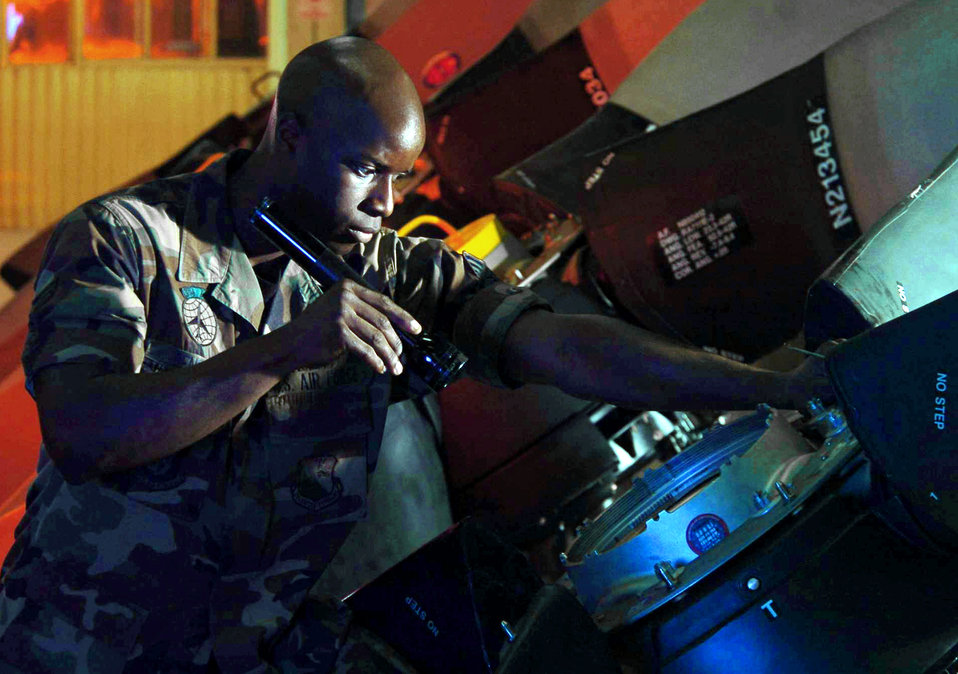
Checkin' it out

YOKOTA AIR BASE, Japan -- Senior Airman Brandon Benson uses a flashlight to look for cracks in a C-130 Hercules barrel assembly during a routine inspection here. Airman Benson and other Airmen of the T56 Engine Regional Repair Center repair all C-130 cargo aircraft engines within Pacific Air Forces. He is a turbo prop mechanic with the 374th Maintenance Squadron.